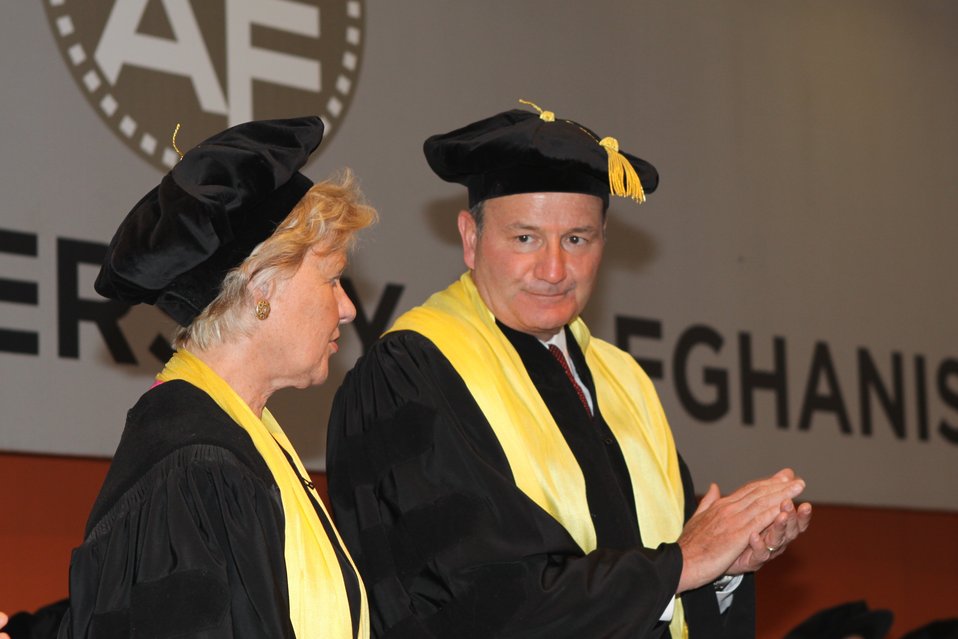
100526 AUAF Graduation 155